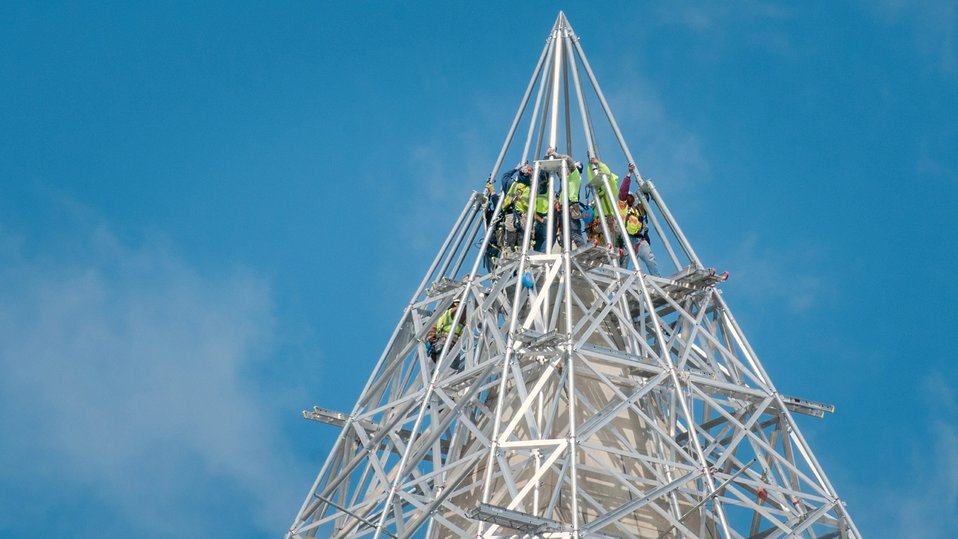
Several workers at the top of the Washington Monument, in Washington, D.C. fit the tip of the monument’s scaffold into place, on Monday, May 13, 2013. This is part of the process to repair the damage from the August 23, 2011 5.8-magnitude earthquake. The Washington Monument is located adjacent to the U.S. Department of Agriculture Yates Building.